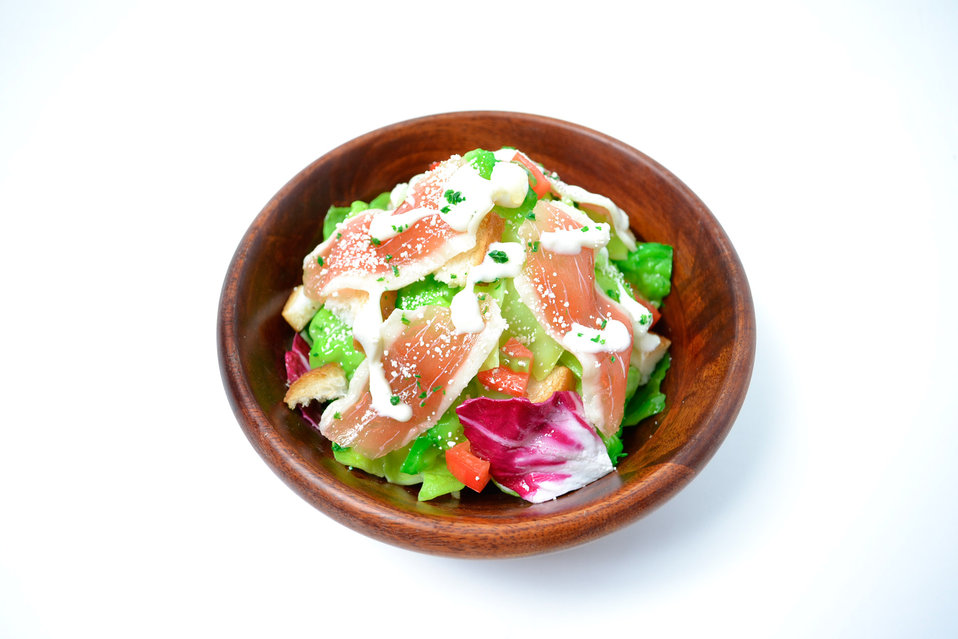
Vegetable salad

Caesar salad,salad,croutons,dressing,vegetables,lettuce.